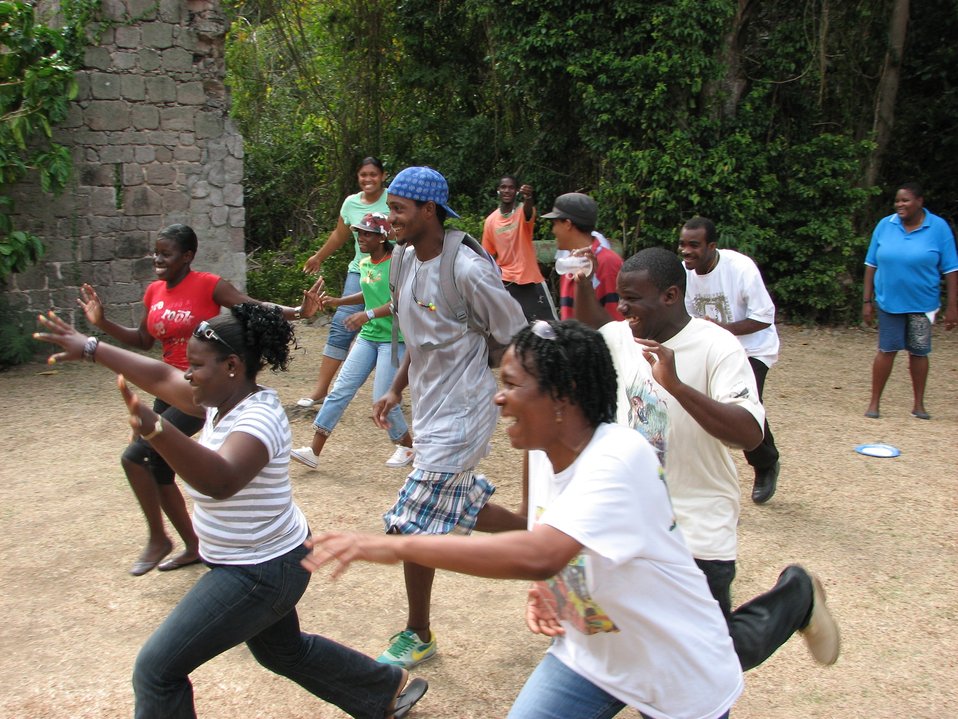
Migration Headache, Activity 4-G - 02

Students learn about Caribbean bird migration through participatory activities at SCSCB training.